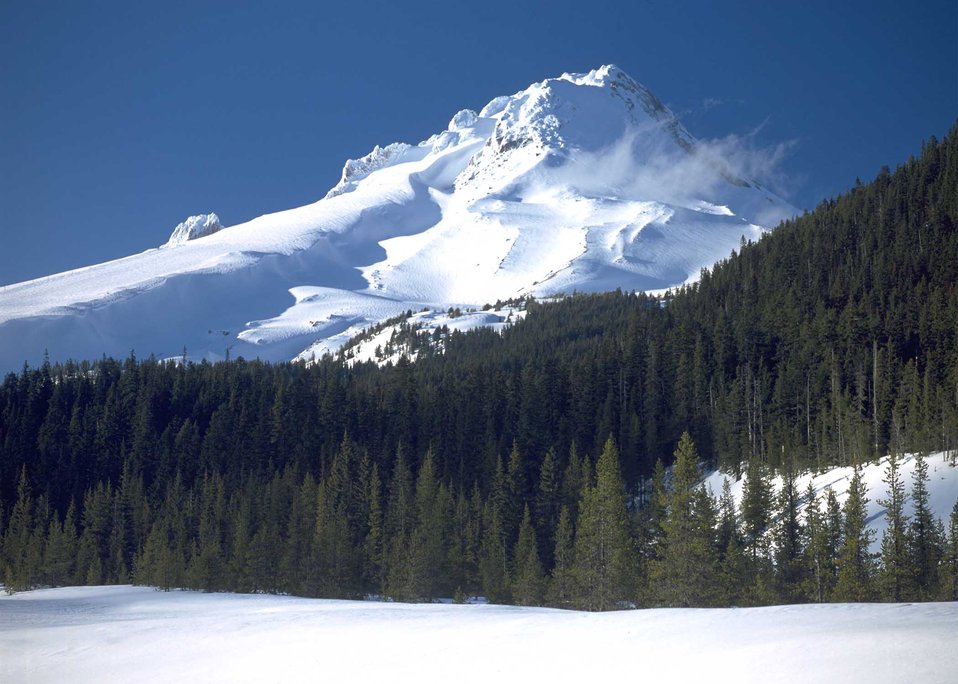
Scenic view of Mt. Hood, Oregon.